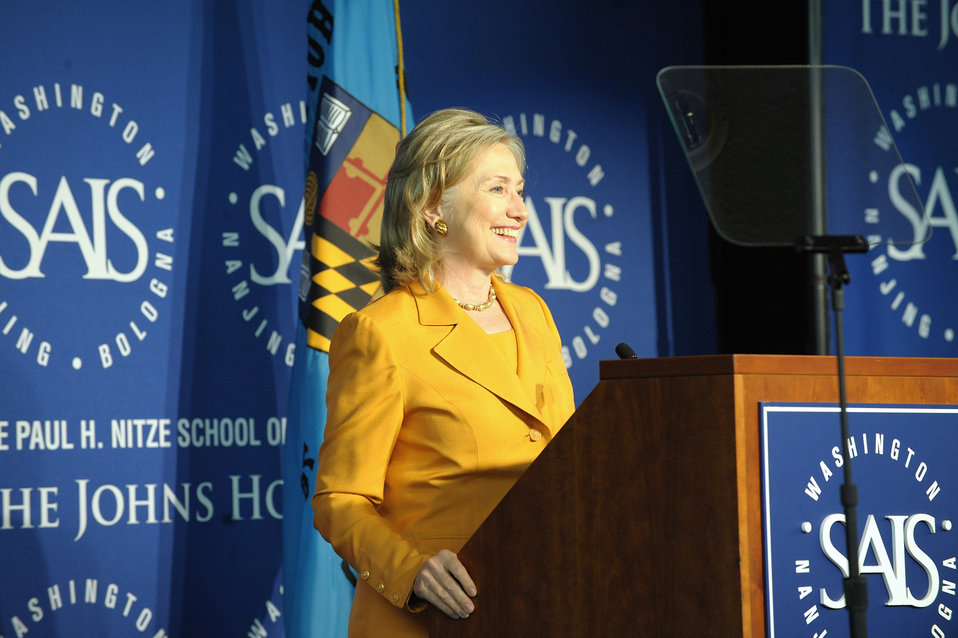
Secretary Clinton Delivers Remarks on the Global Health Initiative at John Hopkins School of Advanced International Studies

U.S. Secretary of State Hillary Rodham Clinton delivers speech on Global Health, at Johns Hopkins School of Advanced International Studies (SAIS) in Washington, D.C., on August 16, 2010.